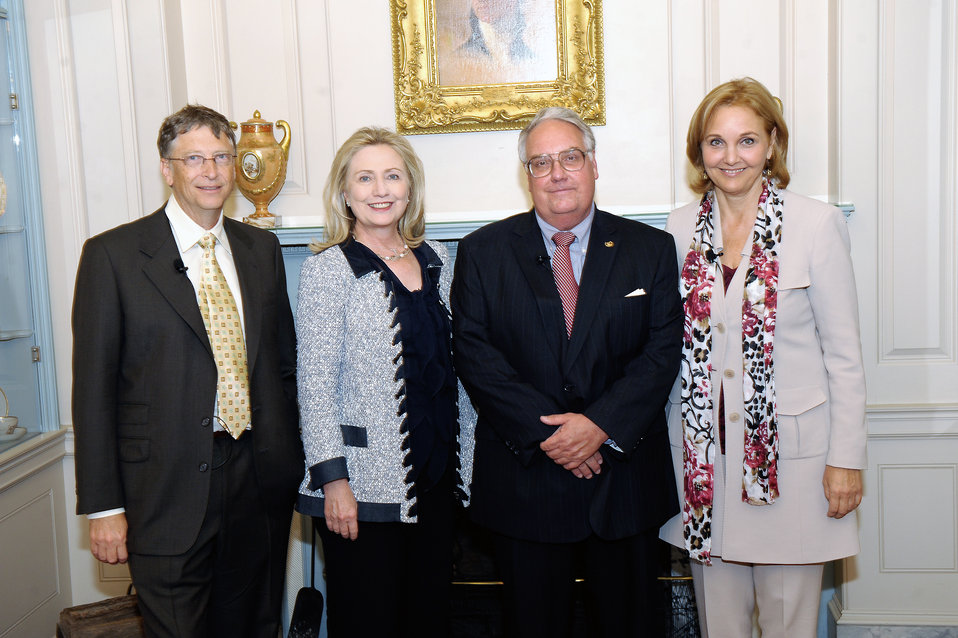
Secretary Clinton Poses for a Photo With Awardees Bill Gates, Howard Buffett, and WFP Executive Director Josette Sheeran

U.S. Secretary of State Hillary Rodham Clinton, center left; poses for a photo with the World Food Program’s 2011 George McGovern Leadership Awardees Bill Gates, left; and Howard Buffett, center right; and World Food Program Executive Director Josette Sheeran, right; at the U.S. Department of State in Washington, D.C., on October 24, 2011.